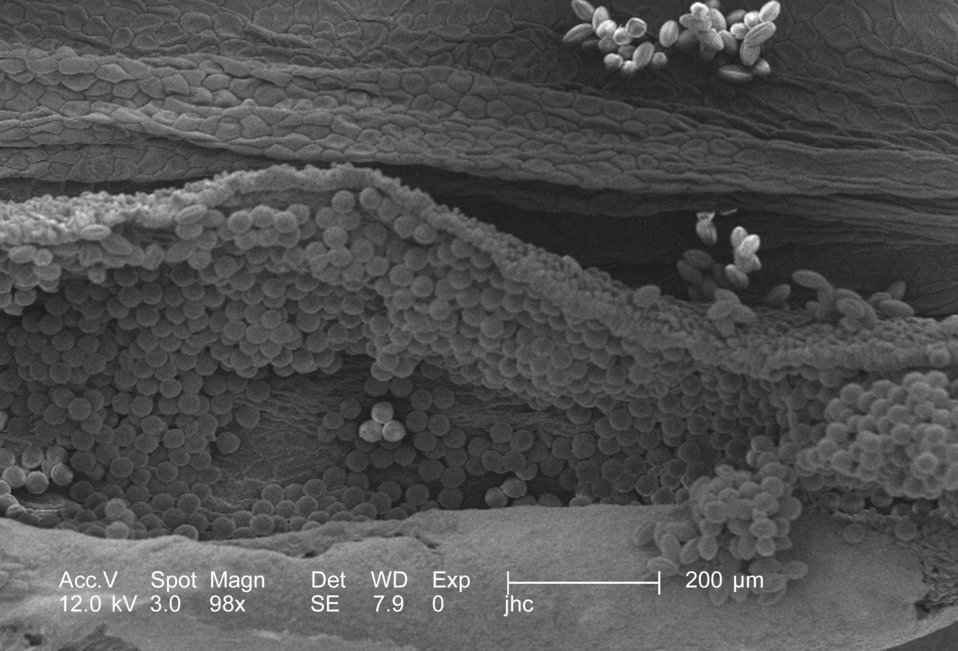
Under a low magnification of 98x, this scanning electron micrograph (SEM) revealed some of the morphologic ultrastructure found amongst a collection of pollen found within the dehisced, or split open, anther of a yellow "Fireworks" sundrops, Oenothera fruticosa flower. Note the pod-like configuration of the anther, within which reside many pollen grains ready for dissemination into the passing wind, or to become attached to a pollinator such as a bee. Judging by the shape of these pollen grains, it appears that the majority had yet to dry, for the elliptical, "football"-shaped grains, closer to the lip of the anther, represented those that had dried, while the round grains represented those that were still moist.